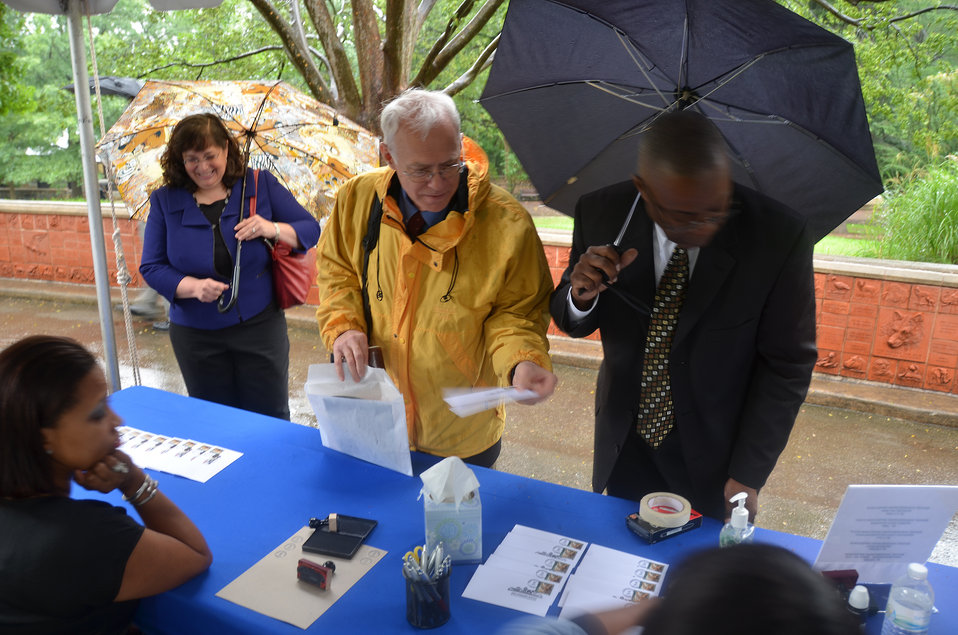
Save Vanishing Species Stamp First Day of Issue